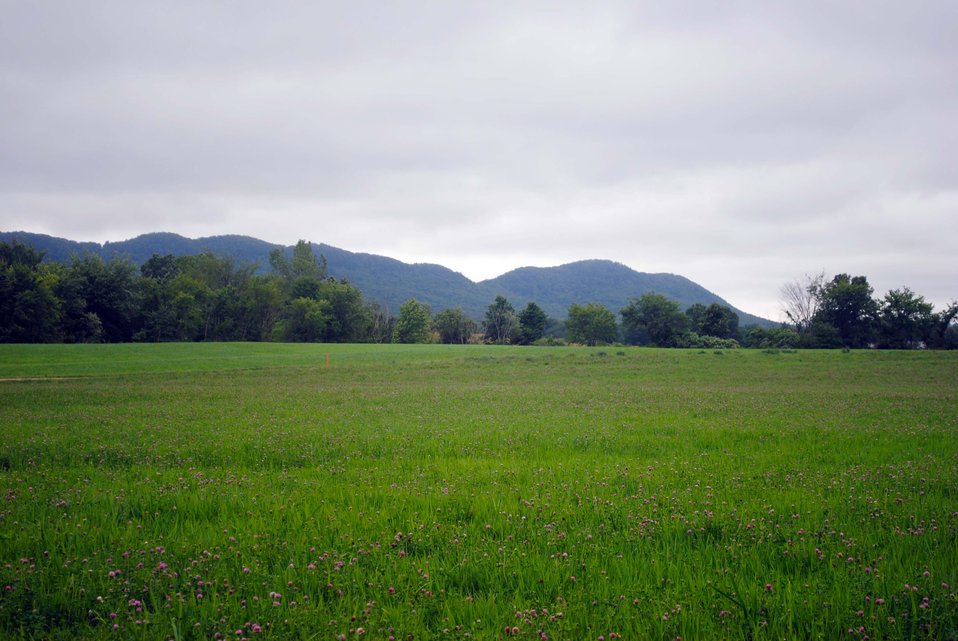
Holyoke Range

The Holyoke Range behind a field of clover at the Fort River Division of the Silvio O. Conte National Wildlife Refuge, Hadley, MA.